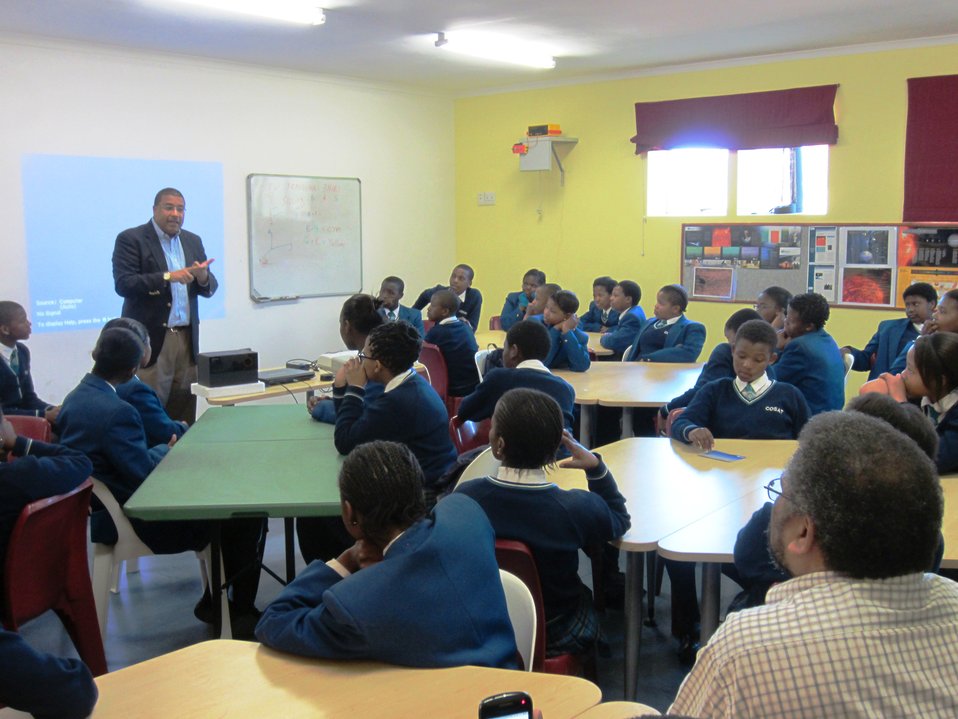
Deputy Assistant Secretary Rose Speaks With Students in South Africa

Deputy Assistant Secretary of State for Space and Defense Policy Frank Rose speaks with students about the benefits of studying science and embracing the dream of space exploration in Khayelitsha, South Africa, on July 19, 2012.